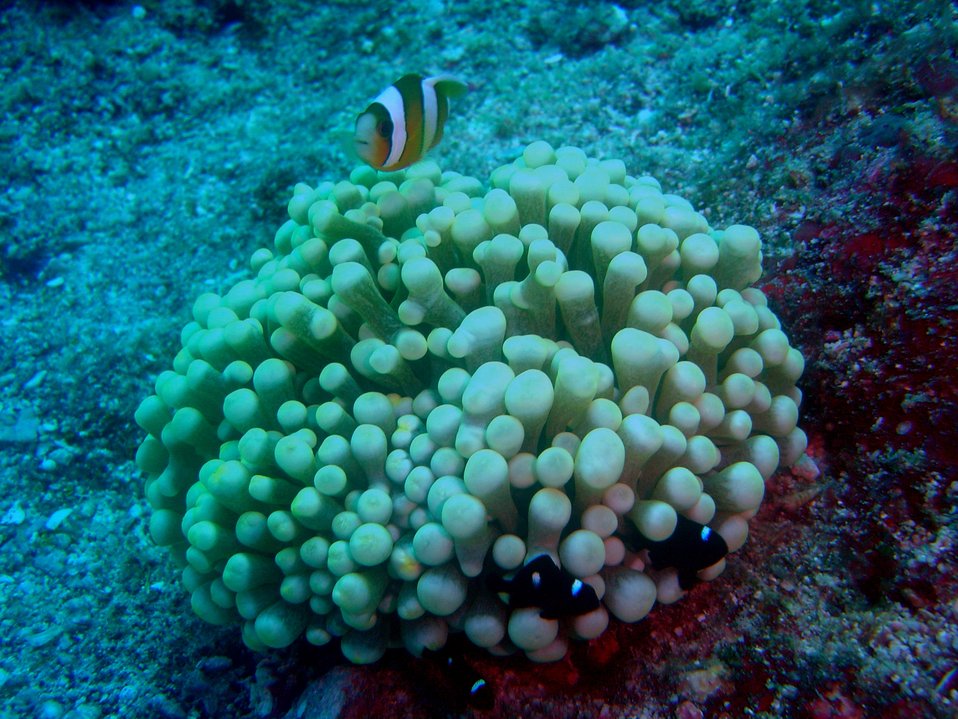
Large anemone with an orange-fin anemonefish (Amphiprion chrysopterus) and three juvenile three-spot dascyllus (Dascyllus trimaculatus)